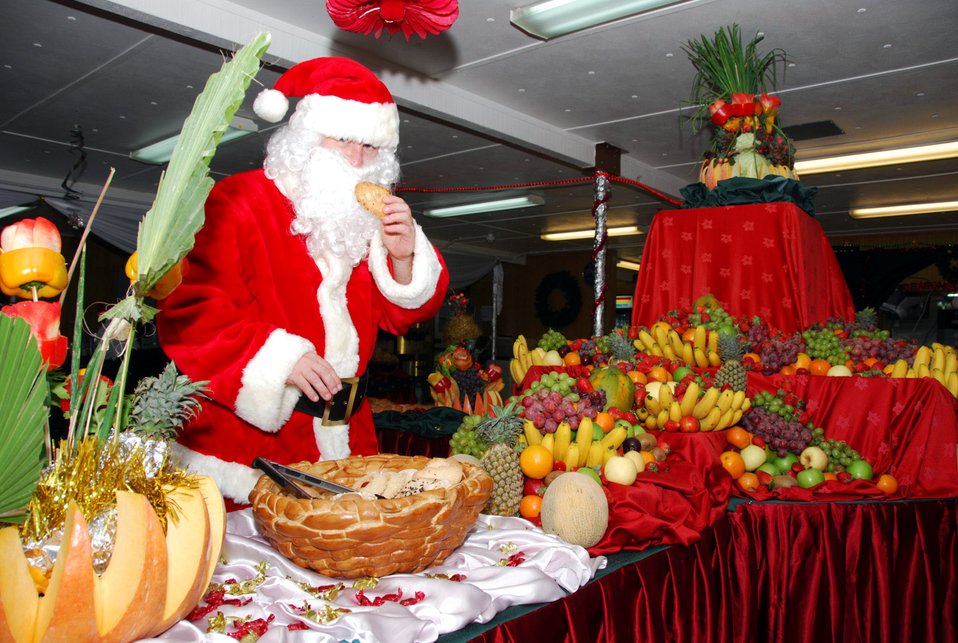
Deployed Airmen enjoy holidays

Santa Claus, also known as Master Sgt. Joe Ennen, is caught red-hatted snitching a cookie Dec. 25 in the Independence Dining Facility at a Southwest Asia air base.
Sergeant Ennen, a 379th Expeditionary Services Squadron member, donned the suit early in the day and played Santa around the base throughout the day, spreading Christmas cheer and posing for photos with base members.